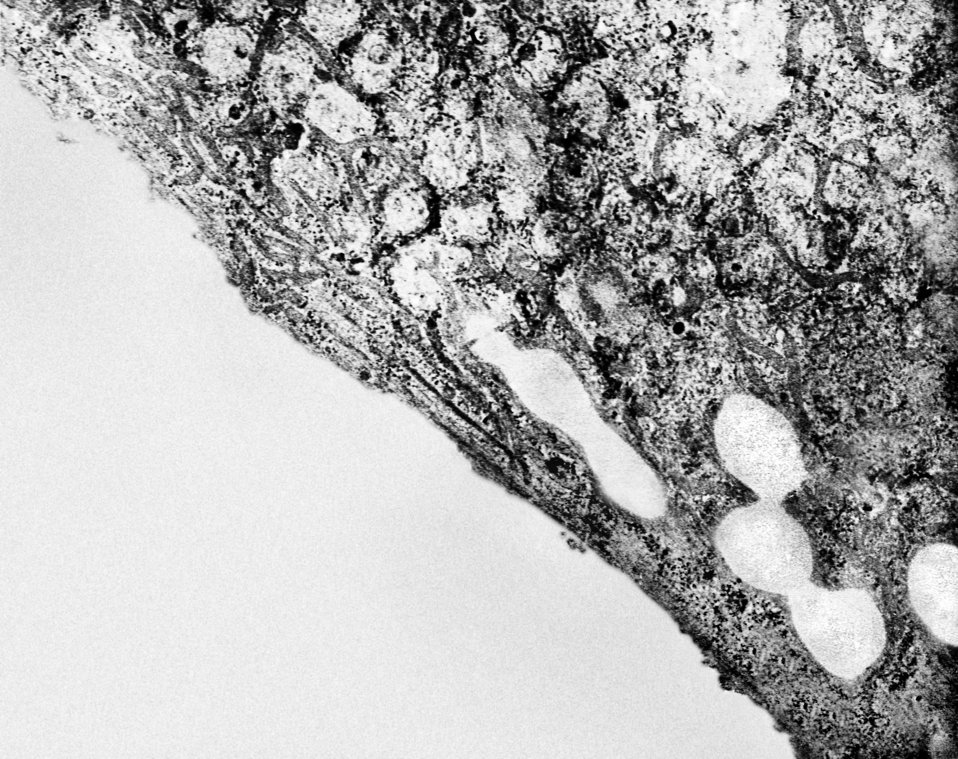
Electron micrograph of Treponema pallidum subsp. pallidum on cultures of cotton-tail rabbit epithelium cells (Sf1Ep).